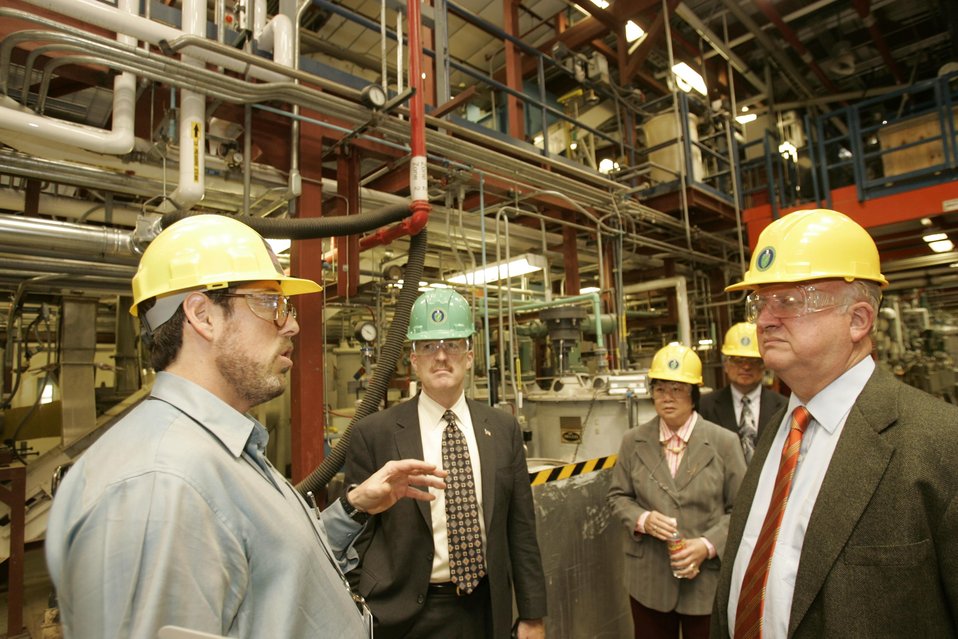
SECRETARY OF ENERGY SAMUEL BODMAN TOURS NREL'S ALTERNATIVE FUELS USER FACILITY FERMENTATION PILOT PLANT.

SECRETARY BODMAN TOURED THE NATIONAL RENEWABLE ENERGY LABORATORY ON A VISIT TO THE SITE ON JUNE 13, 2005.